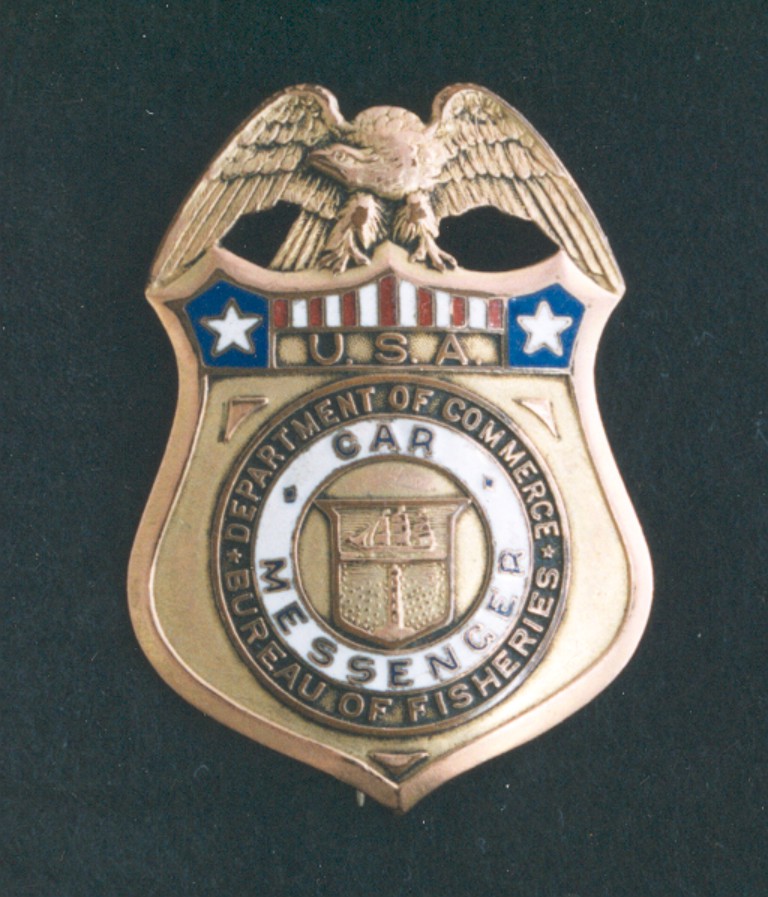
Fish Car Messenger badge